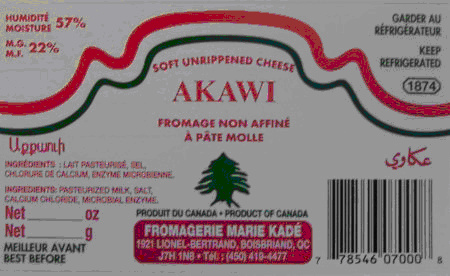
RECALLED - Cheese

December 29, 2011 - Consumer Alert for cheese and milk products due to Listeria monocytogenes contamination.